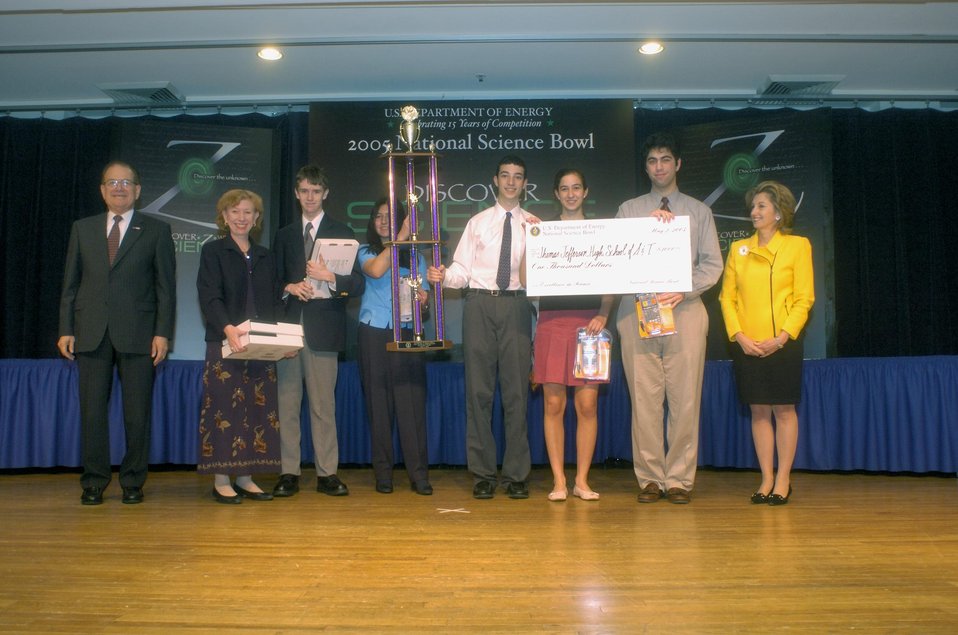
THE 2005 NATIONAL SCIENCE BOWL FIRST PLACE WINNING TEAM, THOMAS JEFFERSON HIGH SCHOOL FOR SCIENCE AND TECHNOLOGY, ALEXANDRIA, VA, HOLDING THEIR TROPHY AND $1,000.00 CHECK FOR THEIR SCHOOL.

WITH THE TEAM ON THE LEFT IS RAYMOND ORBACH, DIRECTOR, DOE OFFICE OF SCIENCE, AND THE RIGHT IS MRS. SAMUEL BODMAN, WIFE OF THE SECRETARY OF ENERGY. DOE CREATED THE NATIONAL SCIENCE BOWL IN 1991 TO ENCOURAGE HIGH SCHOOL STUDENTS TO EXCEL IN MATH AND SCIENCE AND TO PURSUE CAREERS IN THESE FIELDS. OVER 300 SENIOR HIGH SCHOOL STUDENTS, CHAMPIONS FROM 63 REGIONAL COMPETITIONS ATTENDED THE 2005 EVENT. INCLUDED IN THE PRIZES FOR THE FIRST PLACE TEAM WAS A RESEARCH TRIP TO ALASKA.